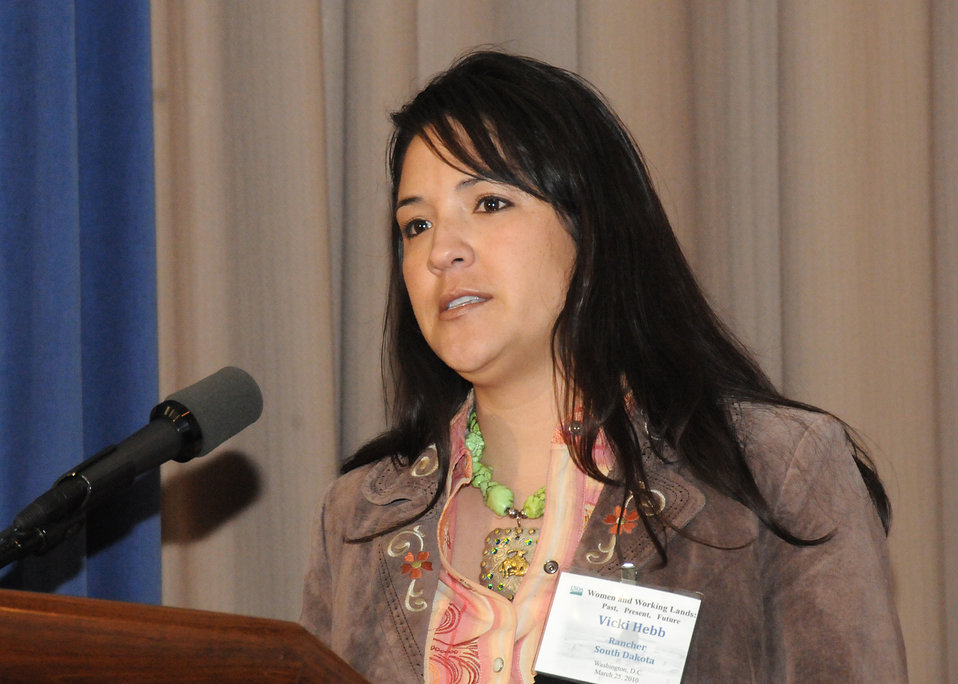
Vicki Hebb and her husband are cow/calf producers on the Cheyenne River Sioux Reservation in, S. D., where they also raise bucking horses for rodeos. Mrs. Hebb was one of 4 women sitting on the panel at the Women and Working Lands: Past, Present, Future conference held in the Jefferson Auditorium at the Department of Agriculture in Washington, D. C., on Thursday, Mar. 25, 2010. USDA photo 10di1283-118